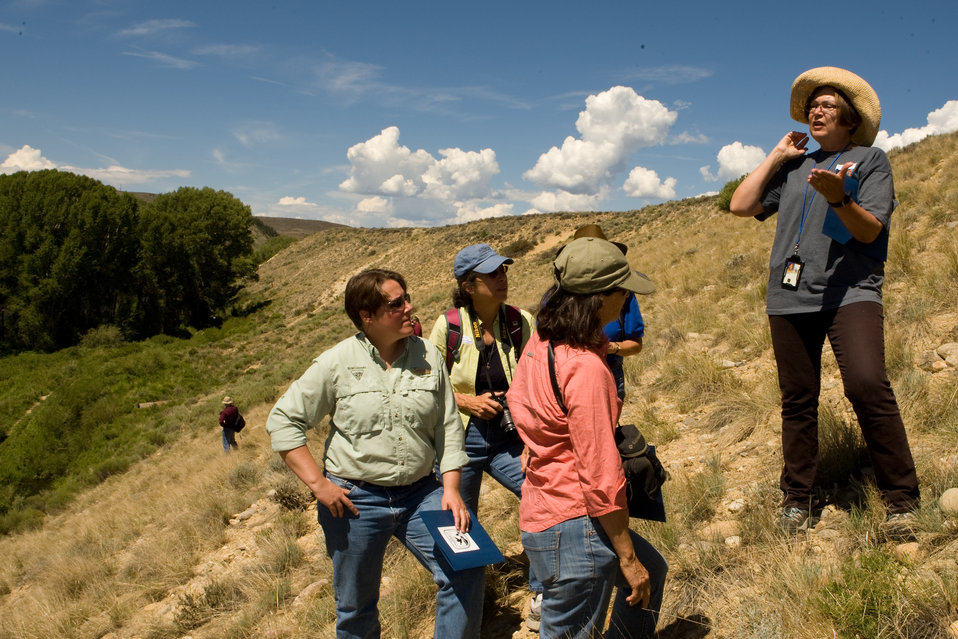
Colorado Rare Plant Conservation Initiative

The Colorado Rare Plant Conservation Initiative (RPCI) is a partnership of 23 statewide and regional agencies, private organizations, and academic institutions working to conserve 121 rare plants in Colorado. As part of these efforts the group developed the Colorado Rare Plant Conservation Strategy, developed Best Management Practices to reduce energy development impacts, addressed climate change, and developed focused strategies for the conservation of individual species at eight priority landscapes. The group has also worked to coordinate volunteer efforts for plant conservation across the state.